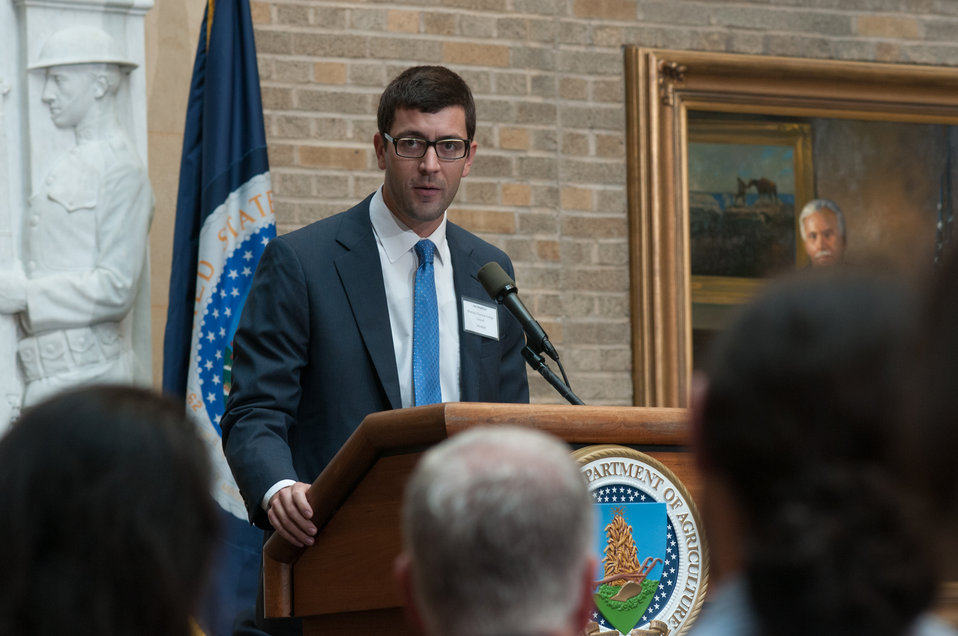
Biomass Thermal Energy Council Executive Director Joseph Seymour speaks during the U.S. Department of Agriculture (USDA) Wood Energy Memorandum of Understanding, and awarded wood energy grants announcements event, at the USDA Headquarters, in Washington, D.C., on Wednesday, September 11, 2013. Signing the MOU are partnership leaders Biomass Thermal Energy Council, Executive Director Joseph Seymour; Alliance for Green Heat, President John Ackerly, USDA Agriculture Deputy Secretary Krysta Harden; Pellet Fuels Institute Executive, Director Jennifer Hedrick; Biomass Power Association, President and CEO Bob Cleaves, and Secretary Thomas Vilsack who signed it earlier. Moderating the event is Under Secretary for Rural Development Doug O’Brien.
The partnership agreement focuses on promoting wood energy nationwide as a means to address fire risks, bolster rural economic development, improve air quality, and help meet the Obama Administration’s renewable energy and energy efficiency goals. These organizations support the use of wood energy across the scale of users – from residential users, to commercial and intuitional facilities, to industrial production of heat and or electricity to drive businesses and feed the electrical grid.
Under the terms of the five grants announced by Deputy Secretary Harden, private, state and federal organizations will work together to stimulate the development of additional wood energy projects in their states. Collectively, $2.9 million will be spent o this effort -- $1.1 million on federal funds and $1.8 million in non federal funds. For more information o0n the cooperative agreement program, visit na.fs.fed.us.werc/wood-energy/ USDA Photo by Lance Cheung.